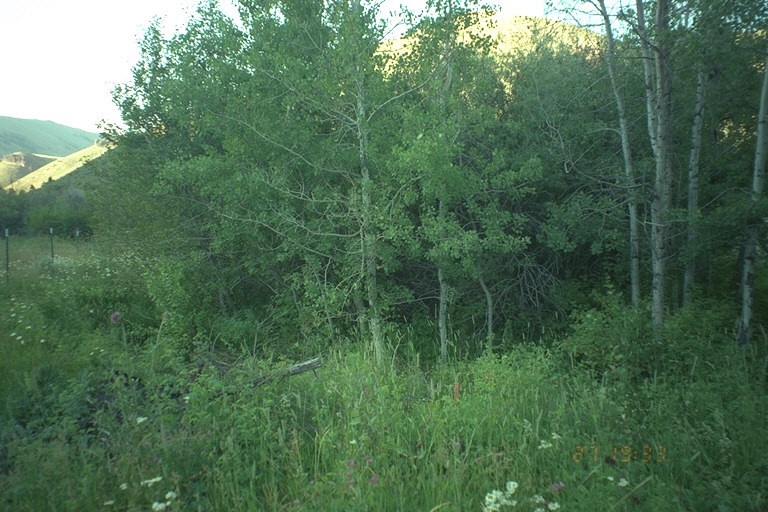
Riparian area Public Lands Salmon Field Office UCSC Upper Columbia Salmon Clearwater District